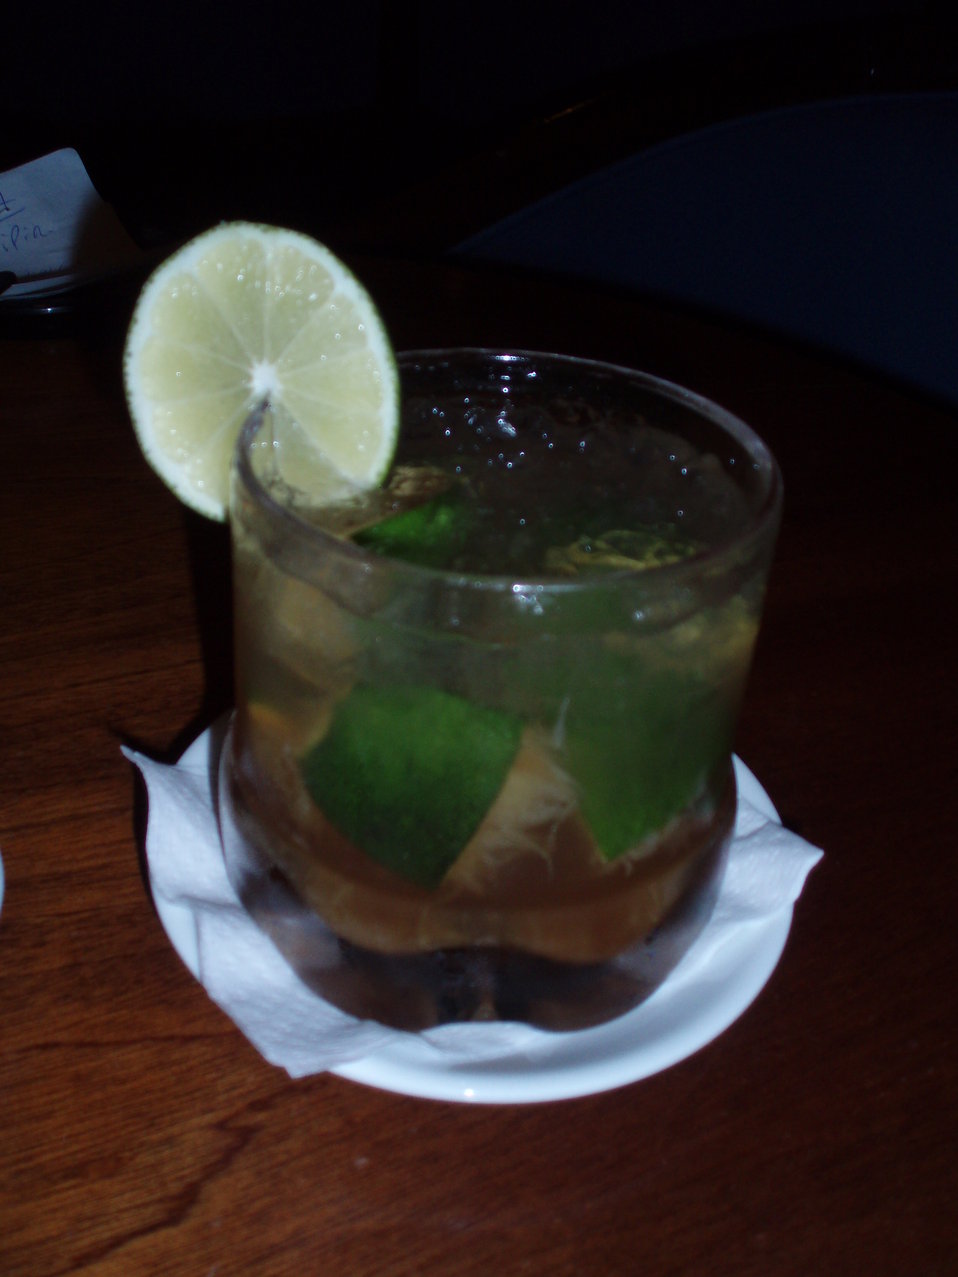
Brasilian drink Caipirinha Deutsch: Caipirnha Caipirinha Nederlands: Caipirinha-cocktail Caipirinha Português: Drink brasileiro Caipirinha